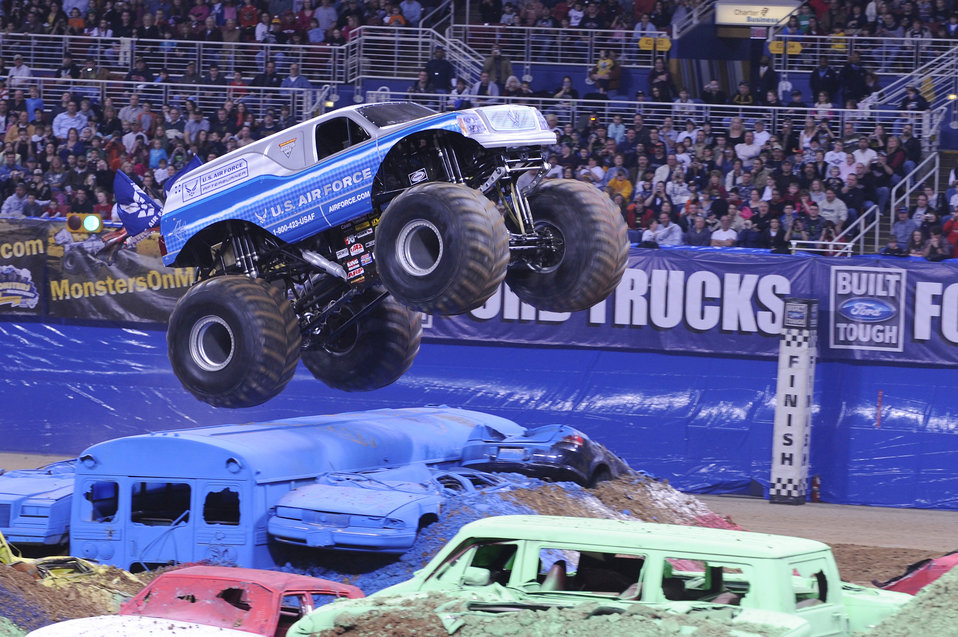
Slamming the Afterburner

Damon Wright jumps the U.S. Air Force monster truck, Afterburner, over three cars and a school bus at Monster Jam Feb. 6, 2010, at the Edwards Jones Dome in St. Louis. The crowd also witnessed the swearing in of 38 individuals to the Air Force Delayed Entry Program before the event.